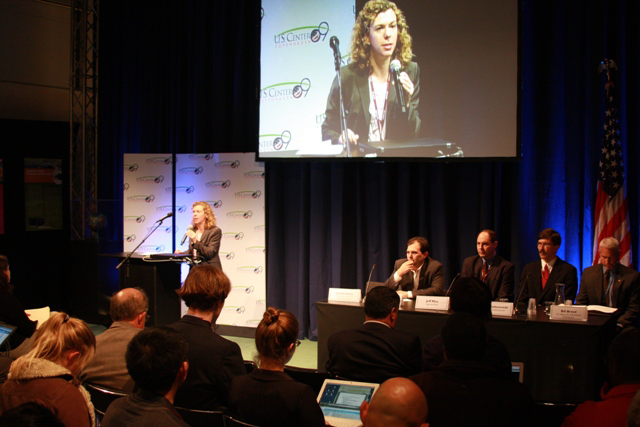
Development Agenda for Clean Energy and Transfer of Technologies

sa Jacobson, President of the Business Council for Sustainable Energy gives a presentation on the Development Agenda for Clean Energy and Transfer of Technologies at the U.S. Center at COP15, Bella Center, Copenhagen, Denmark on December 11, 2009.